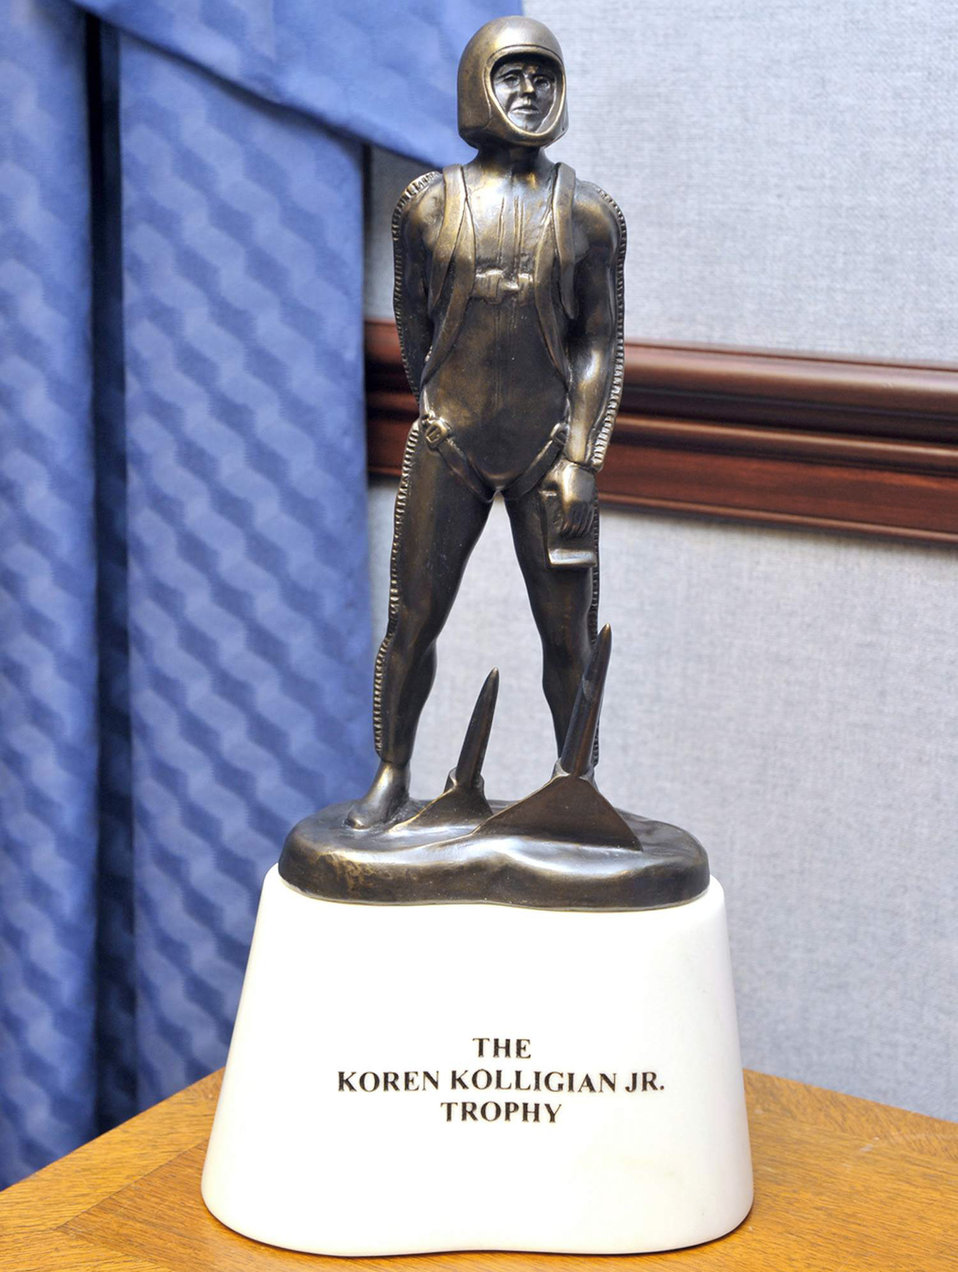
F-16 pilot receives Kolligian safety award

The Kolligian Trophy, established in 1958, is the only Air Force individual safety award personally presented by the Air Force chief of staff. The trophy, a symbolic representation of an Air Force jet pilot, was established to recognize outstanding feats of airmanship by aircrew members who by extraordinary skill, exceptional alertness, ingenuity, or proficiency, averted accidents or minimized the seriousness of the accidents.